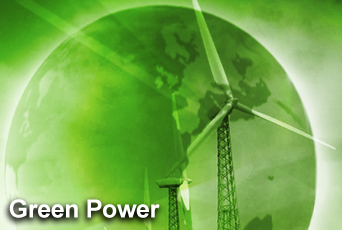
Air Force recognized as top federal green power purchaser

For the third year in a row, the Air Force heads the Environmental Protection Agency's list of Top 10 federal government green power purchasers in the Green Power Partnership. The list highlights EPA's federal Green Power Partners that have completed the largest annual voluntary purchases through Dec. 31, 2006.